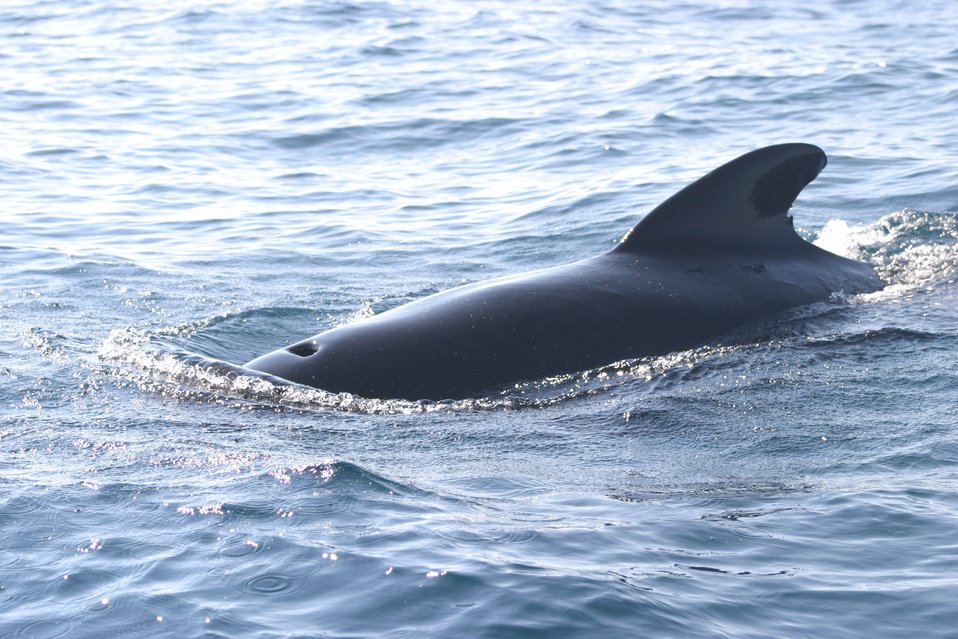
Pilot whale.